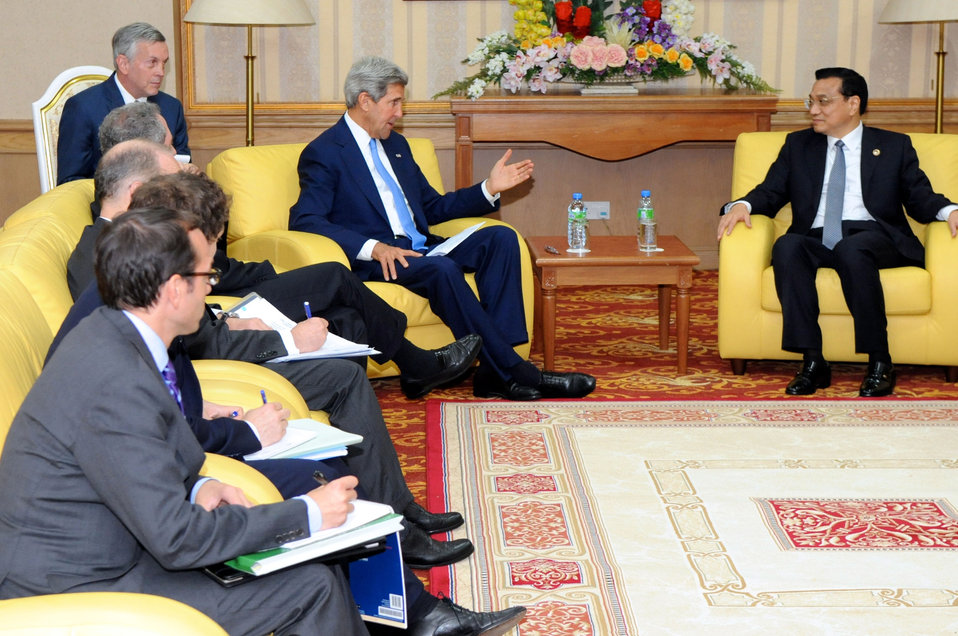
Secretary Kerry Meets With Chinese Premier Li

U.S. Secretary of State John Kerry and Chinese Premier Li Keqiang meet on the margins of the U.S.-ASEAN Summit in Bandar Seri Begawan, Brunei, on October 9, 2013.